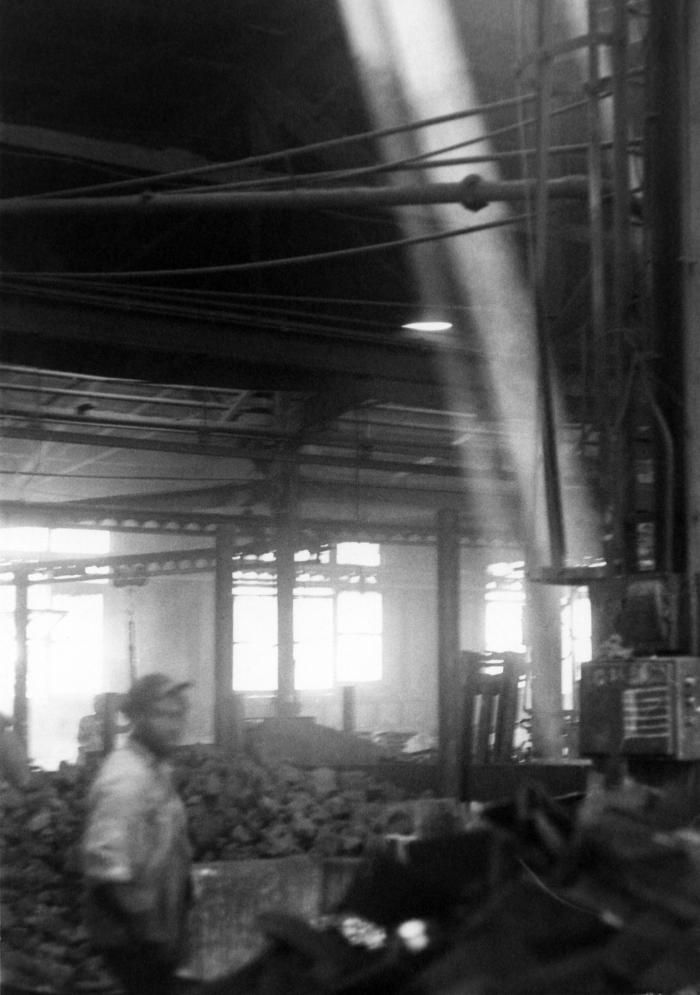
Thought to be from the 1970s, this historic image was provided by the Center for Disease Control's (CDC), National Institute for Occupational Safety and Health (NIOSH). The photograph depicted an industrial worker who was inside a factory, where the atmosphere appeared to be clouded with airborne particulates. Note the beam of sunlight in the background, which was made visible due to the high amount of floating debris. Also of note, is the fact that the worker was wearing no filtered breathing mask.In gaining a better understanding of workplace hazards, through hands-on and on-site information acquisition, protocol-formulating bodies such as NIOSH, are better able to create a safer workplace through substantiation of appropriate safety regulations.